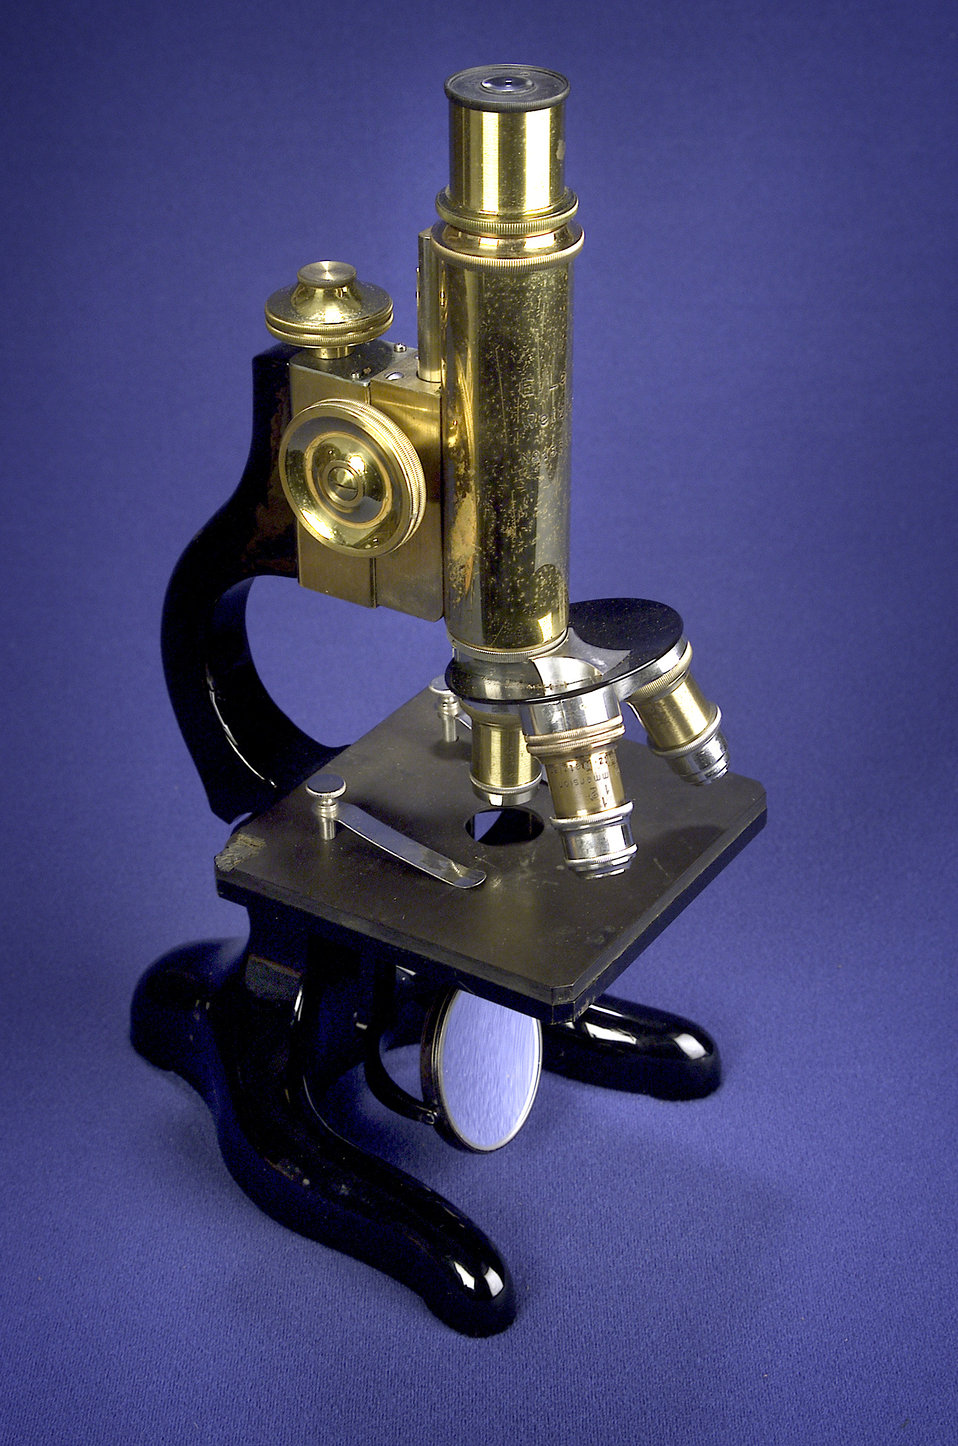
This is the 1913 E. Leitz-Wetzlar microscope that Dr. Mountin used in medical school and early in his career as a physician.